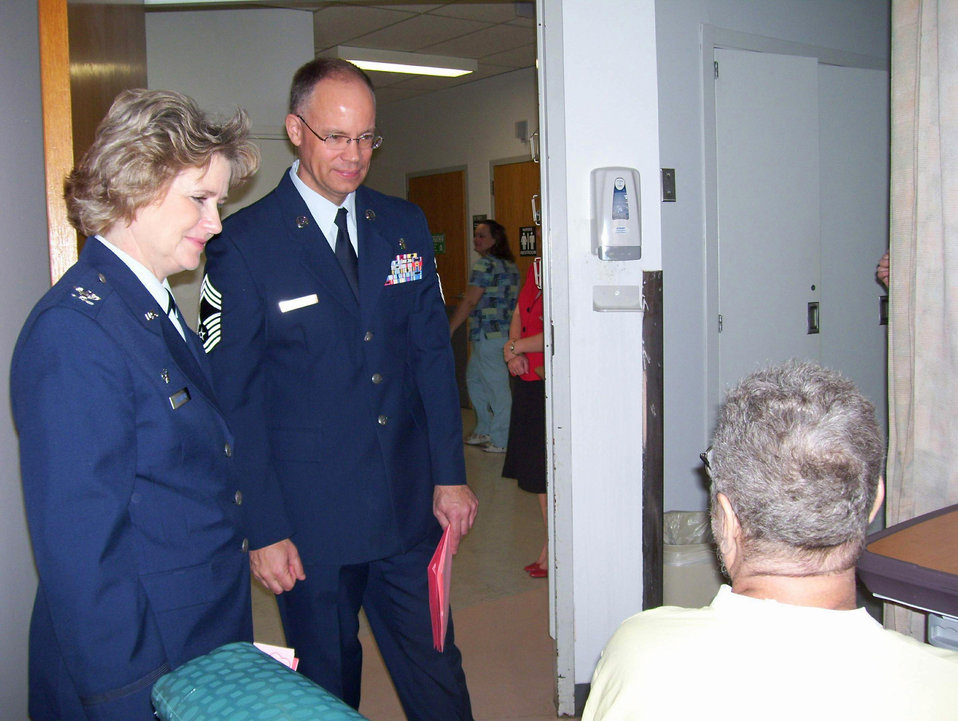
WHMC leaders participate in Valentines for Vets program

Col. Amy Bachelor (left) and Chief Master Sgt. John Gervais visit with hospitalized veterans Feb. 13 at Audie L. Murphy Memorial Veterans Hospital, in San Antonio, as part of the Valentines for Vets program. Colonel Bachelor is the 59th Inpatient Operations Group commander. Chief Gervais is assigned to the 59th Medical Support Group.